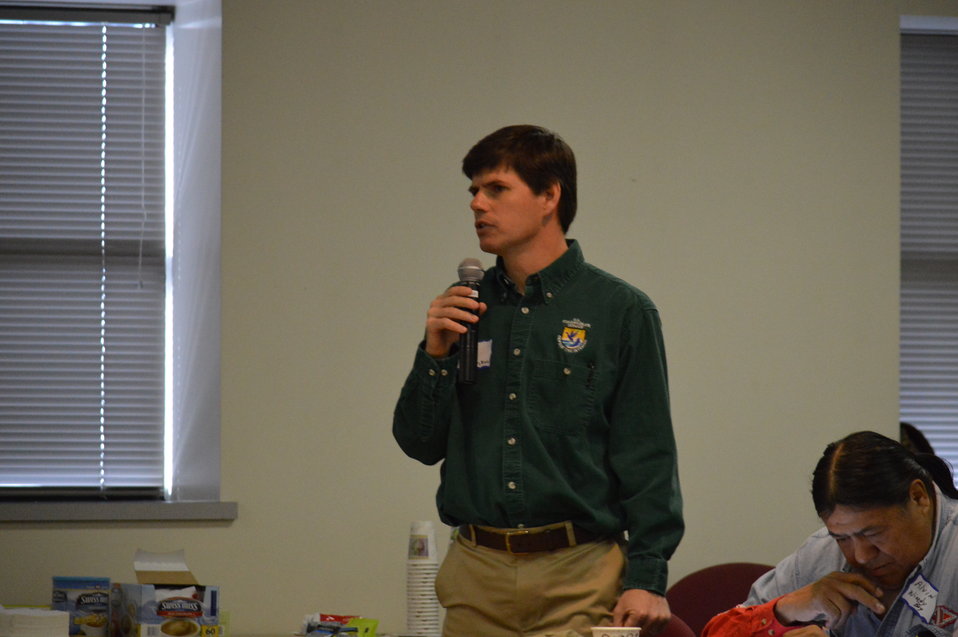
Eagle Summit III

Clint Riley's (ARD for Migratory Birds) opening remarks at the Eagle Summit III in Denver, Colorado on March 20, 2014 at the Rocky Mountain Arsenal National Wildlife Refuge.